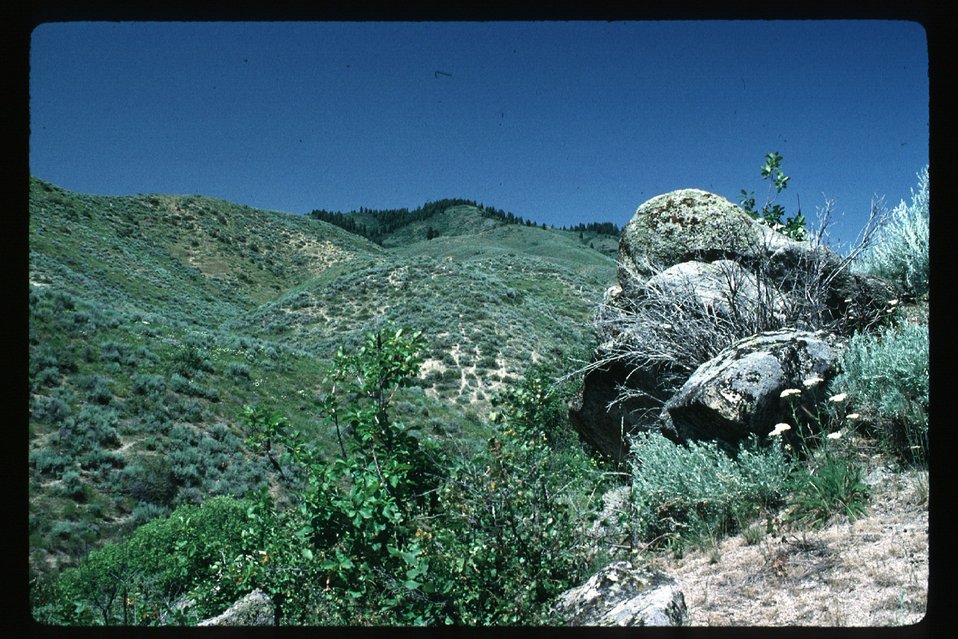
Rocky Canyon Boise Foothills Four Rivers Field Office LSRD Lower Snake River District